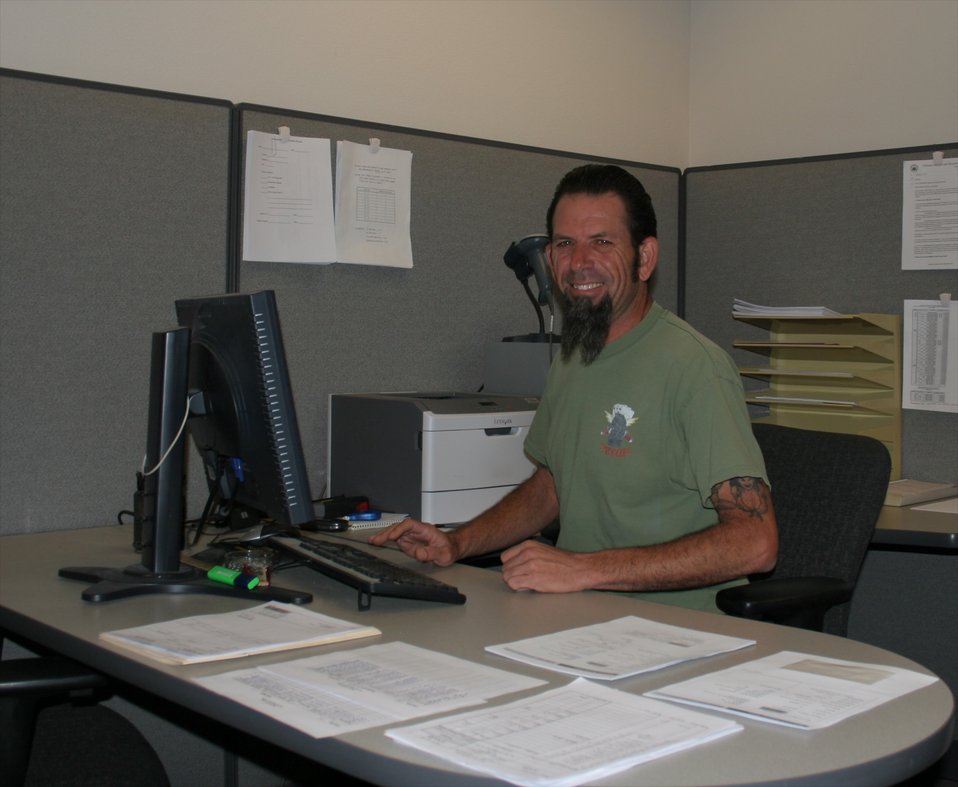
Agency Services Supervisor Brad Liford smiles for the camera.; Location: Riverside Federal Records Center, Perris, CA